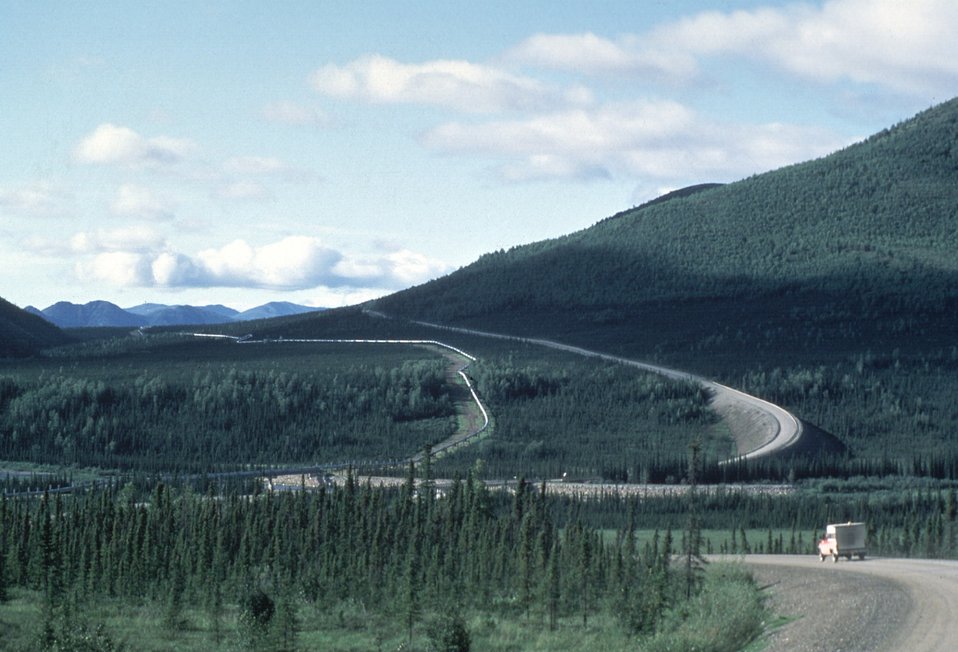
Trans-Alaska Pipeline, Dalton Highway